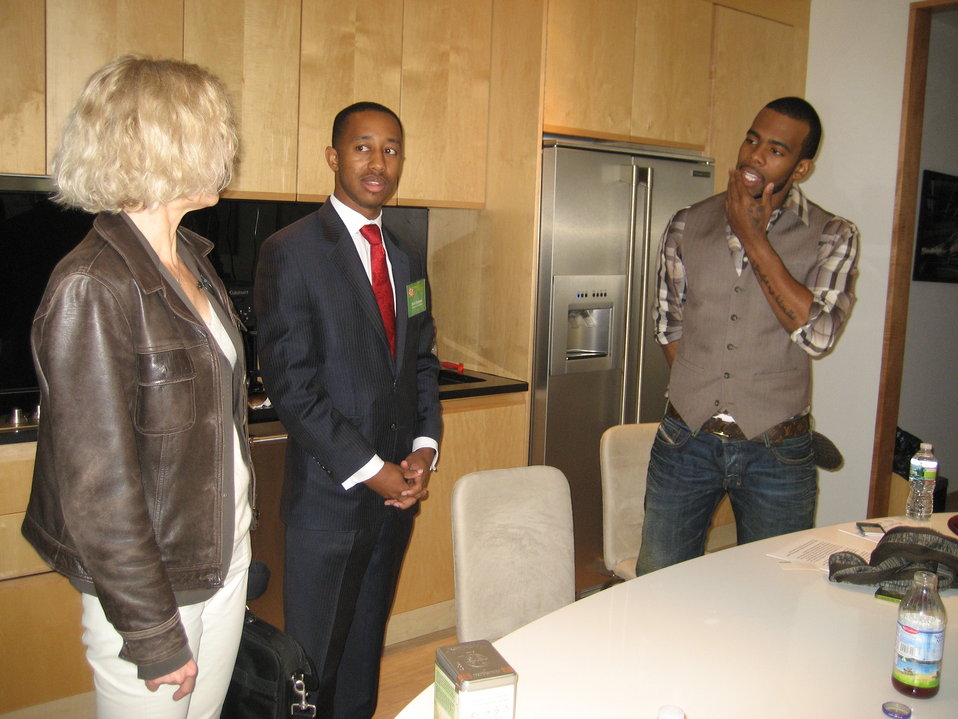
Mentor 27